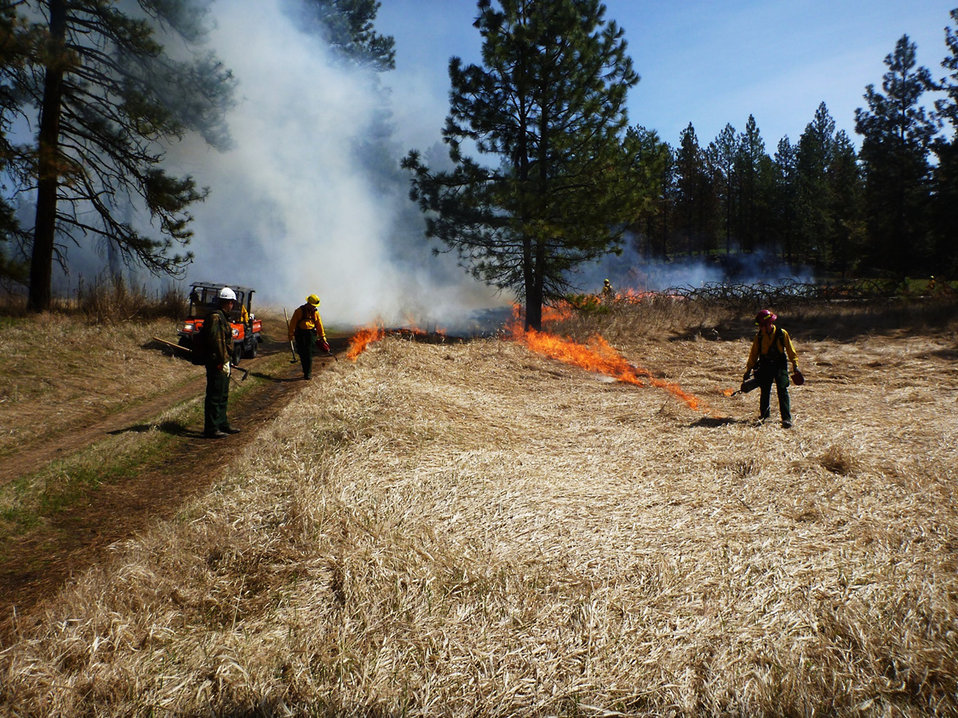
Thanks to our Cooperators!

Here, federal and city cooperators assist in lighting and holding along the project boundary.